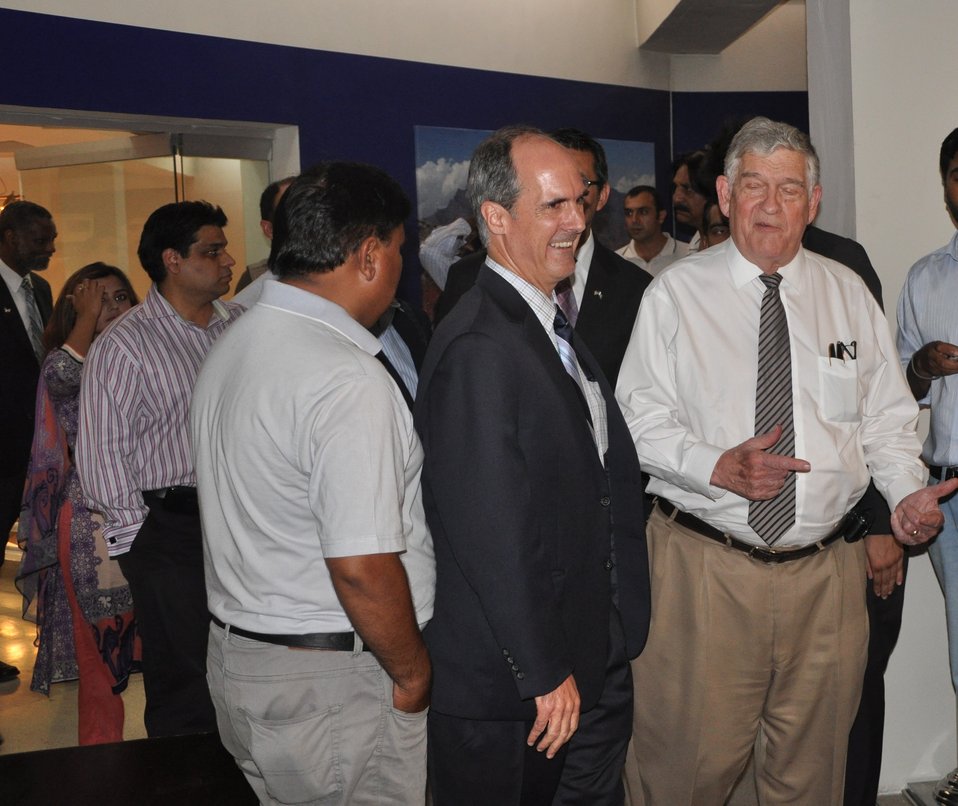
Provinicial Mission Director Ted Gehr meeting people at the exhibition